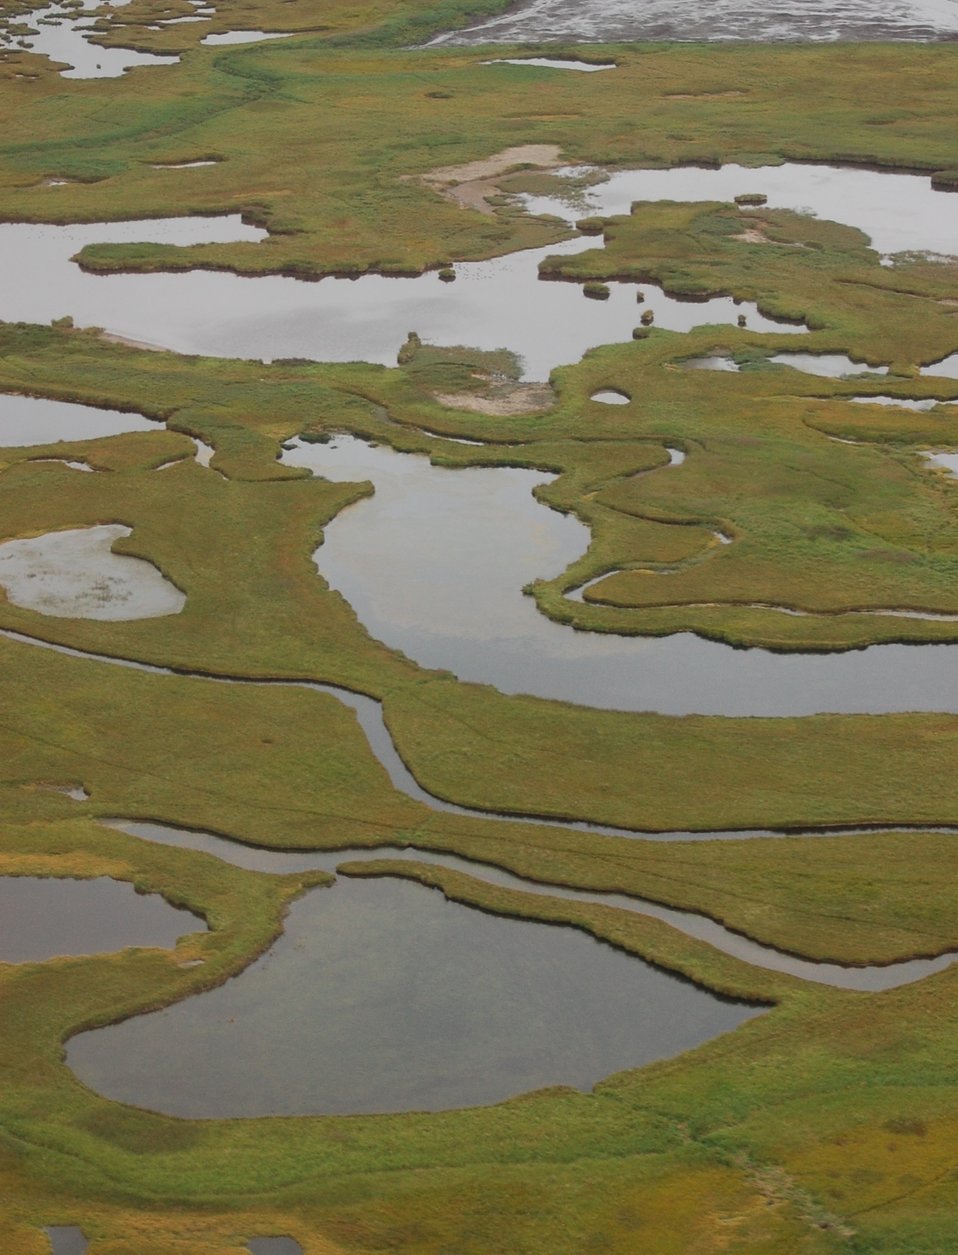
Izembek wetlands

Izembek National Wildlife Refuge